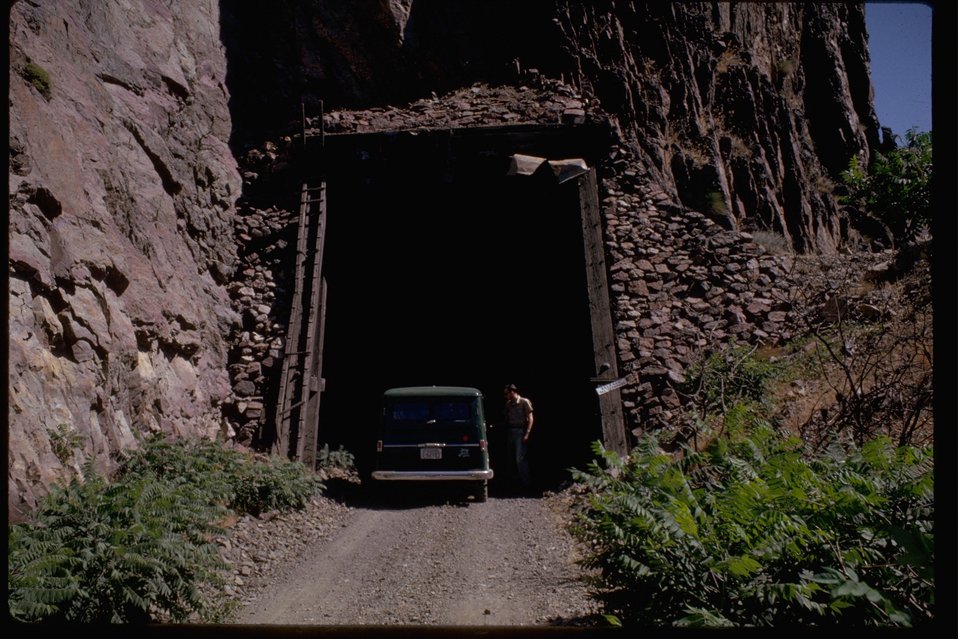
Historic tunnel near Dant in the Lower Deschutes Area.